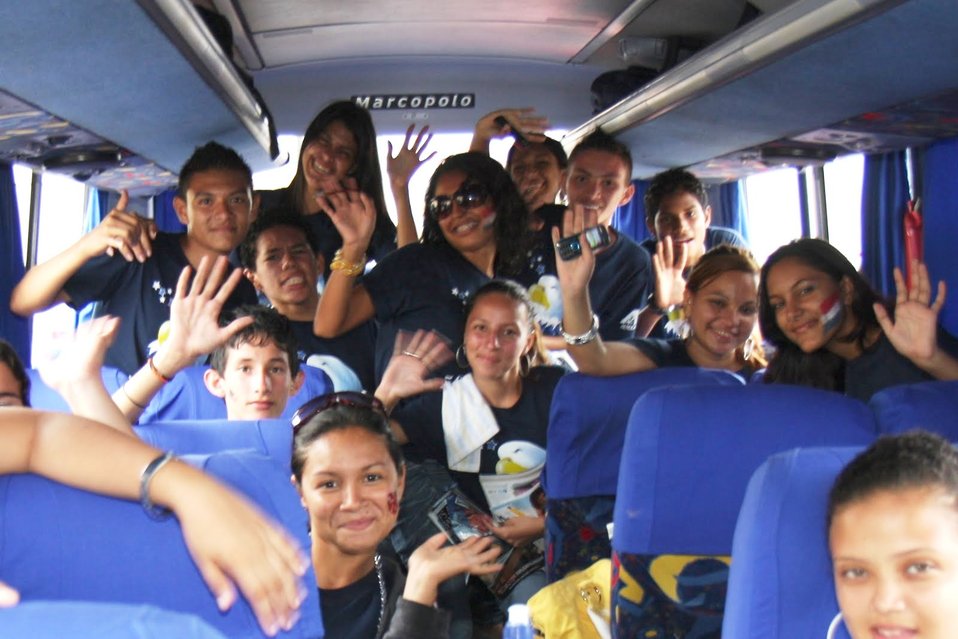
Students Pose for a Photo

Students from U.S. Embassy San Jose in Costa Rica's English Access Microscholarship Program pose for a photo on the bus during the U.S. Independence Day celebration on July 2, 2010, in San Jose, Costa Rica.